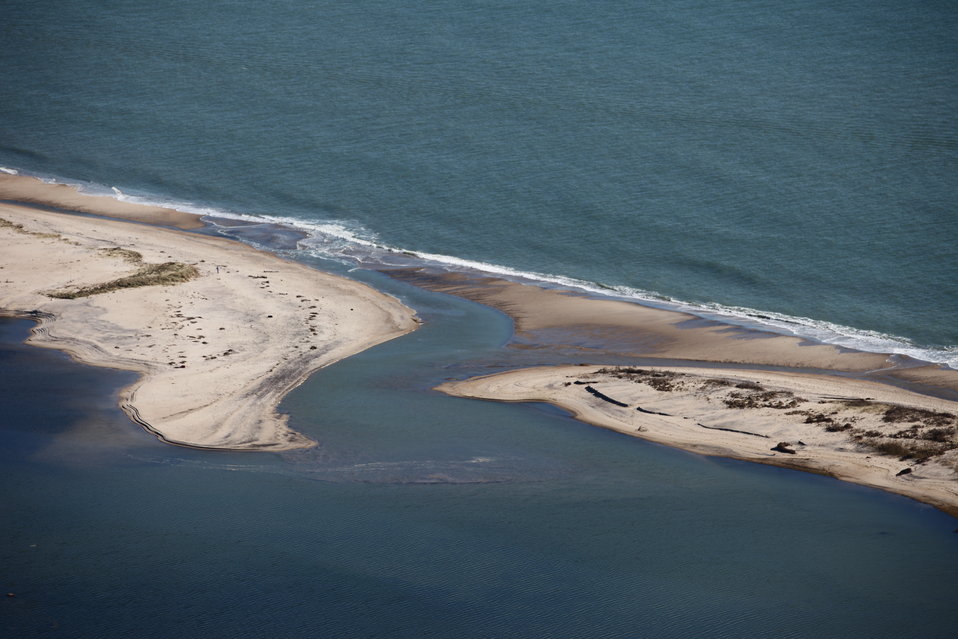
Breach at Trustom Pond (RI)

Closer image of Trustom Pond breach caused by Hurricane Sandy. Trustom Pond had not naturally breached in over a decade prior to Hurricane Sandy.